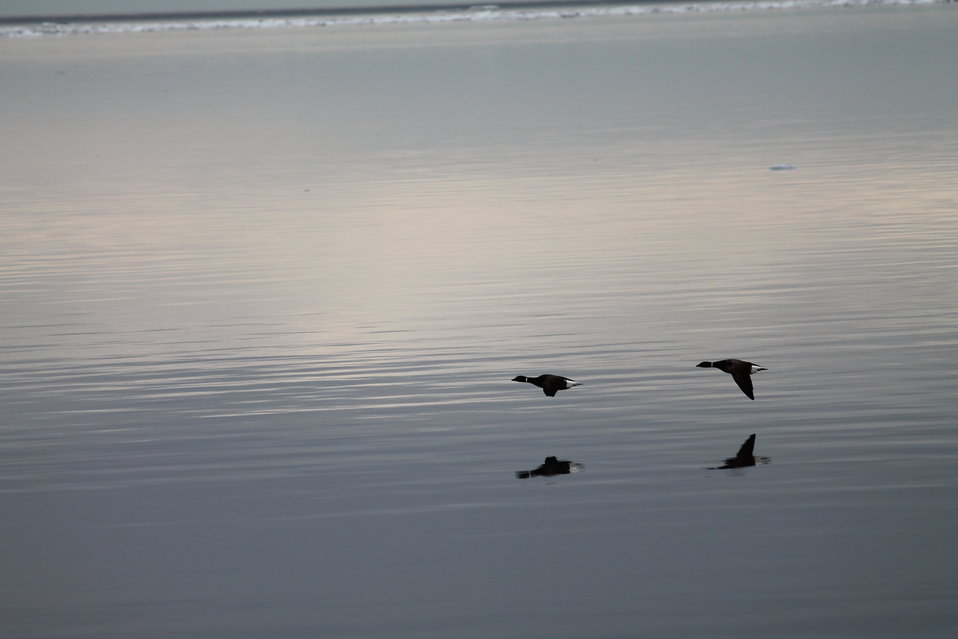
Ocean flight

These black brant were photographed flying over the newly opened ocean water that surrounds Kigigak Island. Ice had covered this area not a few weeks before.

USFWS Yukon Delta NWR